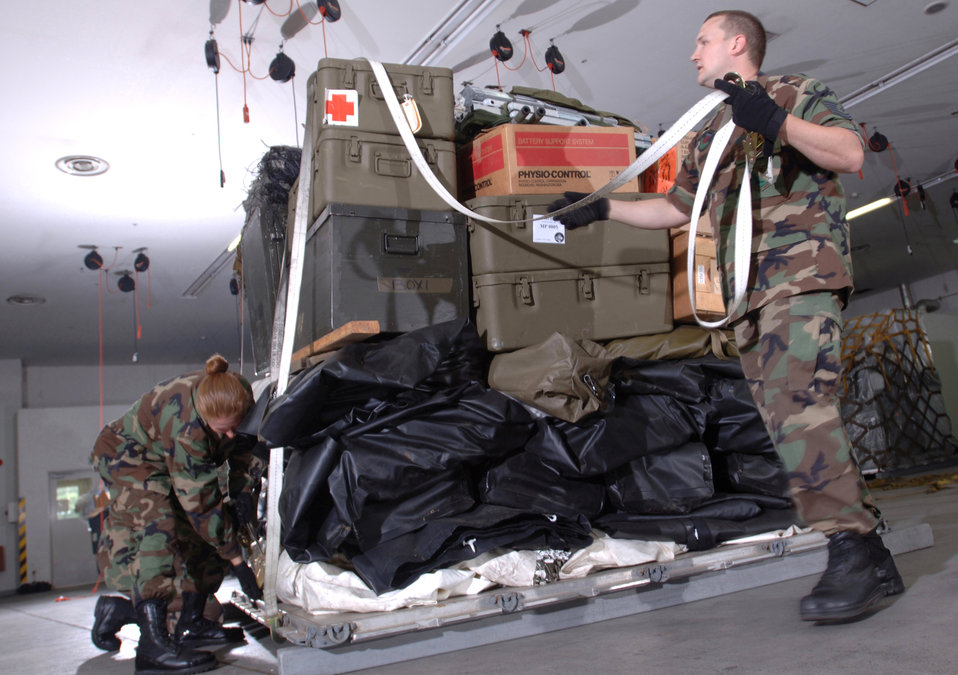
Pallet protection

YOKOTA AIR BASE, Japan -- Airman Jessica Johnson (left) and Tech. Sgt. William Young secure equipment on an expeditionary medical support pallet. The 374th Medical Group logistics Airmen here handle about $24 million worth of medical war reserve materiel supplies and equipment for contingency operations.